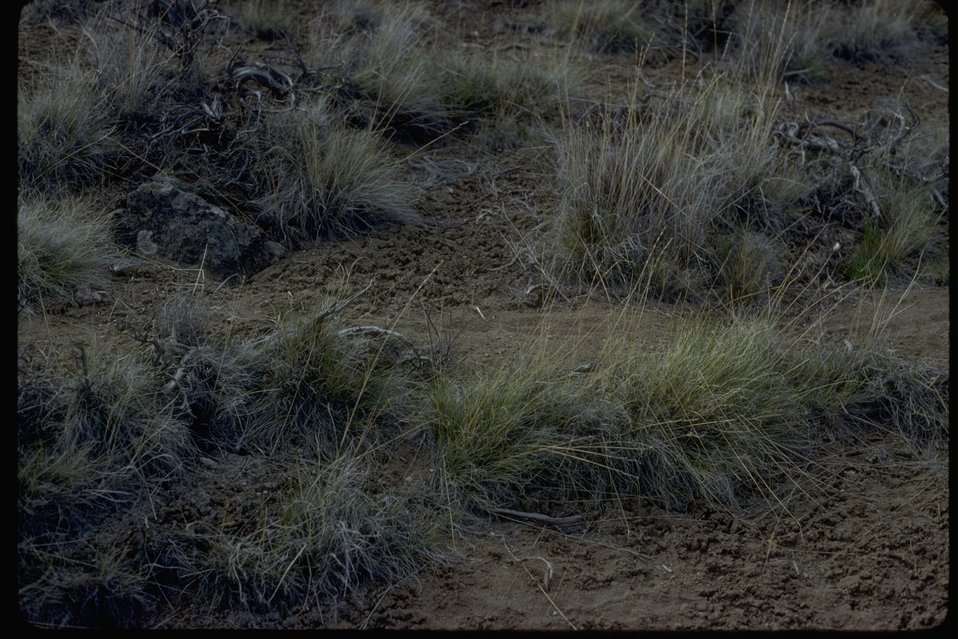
Upland terracette or catstep caused by slumping in the soil and possibly grazing.